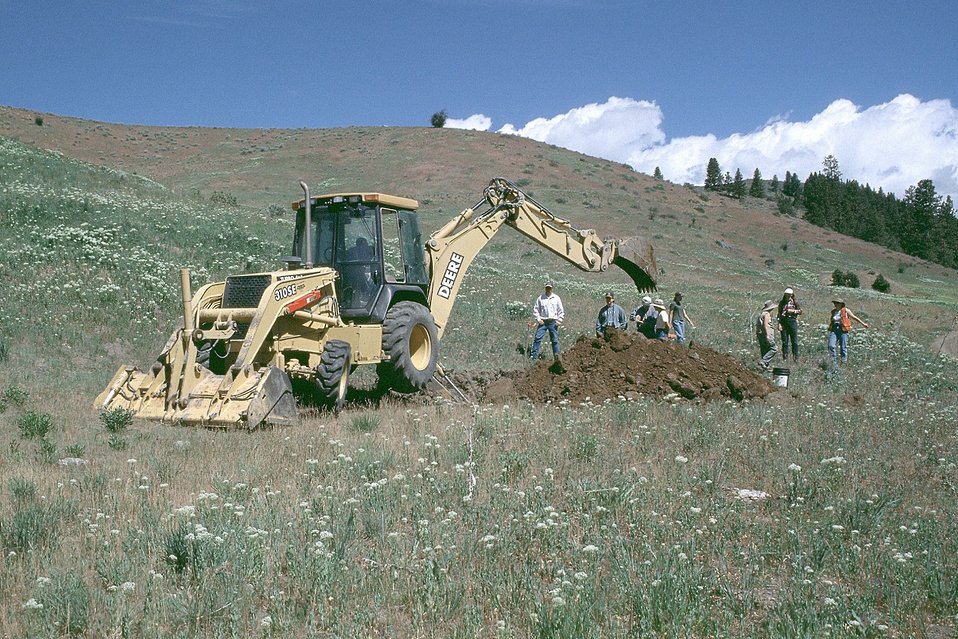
AML Poorman, Vale District, Oregon. Digging test hole for Repository.